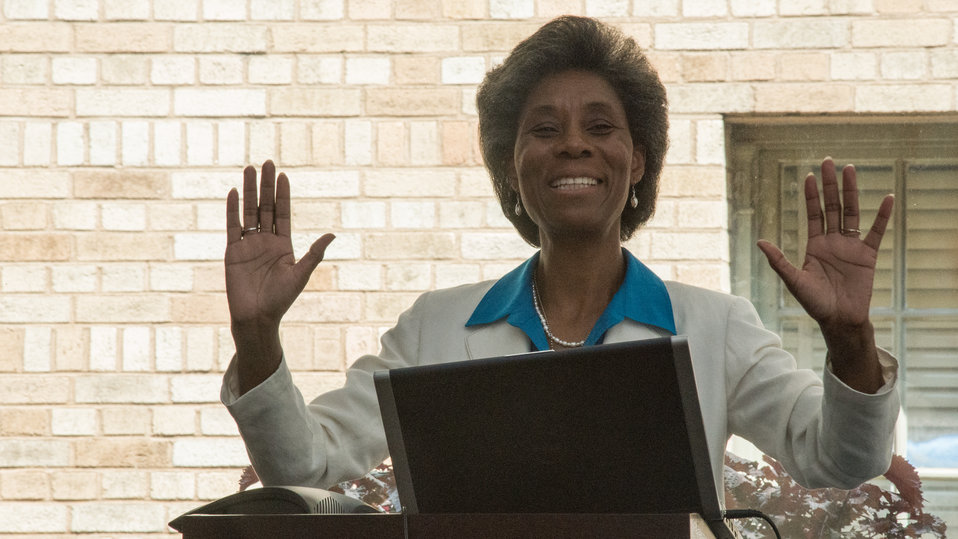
Sage Horizons Consulting Owner Cynthia Gibbs speaks at the U.S. Department of Agriculture’s (USDA) Rural Development (RD) 2nd Annual Cultural Transformation kickoff opening ceremony and forums, themed “Employees Influencing Change,” on Tuesday, Aug. 13, 2013, USDA in Washington, D.C.